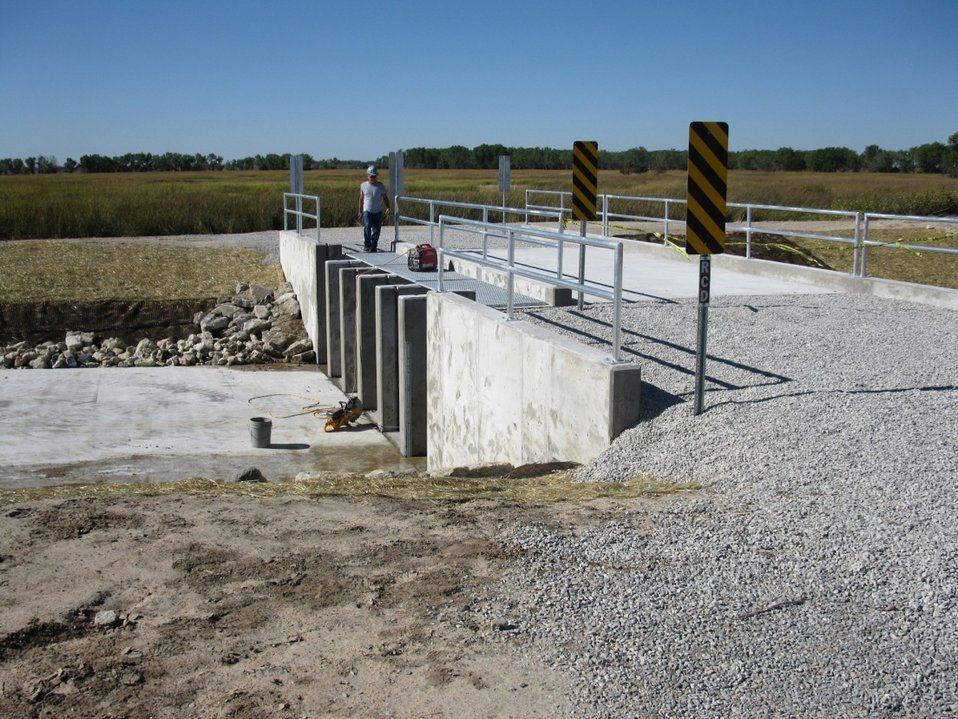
Water Control Structure

View of new structure with centerline moved a few feet downstream from the original location at Quivira National Wildlife Refuge in Kansas. The new structure is a cast-in-place concrete & bridge for movement of equipment and was funded by American Recovery and Reinvestment Act funds.